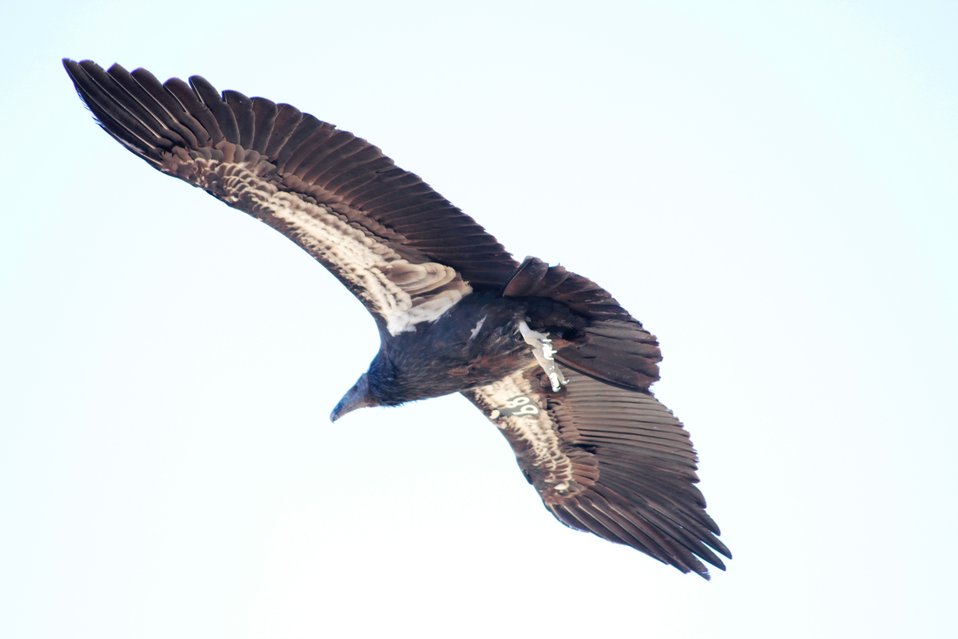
Condor underside

The adult California Condor is a uniform black, with the exception, especially in the male, of large triangular patches or bands of white on the underside of the wings. It has gray legs and feet, an ivory-colored bill, a frill of black feathers surrounding the base of the neck, and brownish red eyes.

As an adaptation for hygiene, the condor's head and neck have few feathers, which exposes the skin to the sterilizing effects of dehydration and solar ultraviolet light at high altitudes. The skin of the head and neck is capable of flushing noticeably in response to emotional state, a capability that can serve as communication between individuals. The skin color varies from yellowish to a glowing reddish-orange.

Contrary to the usual rule among true birds of prey, the female is slightly smaller than the male. Overall length can range from 109–140 cm (43–55 in) and the wingspan is 2.49–3 m (8.2–9.8 ft). Their weight can range from 7–14.1 kg (15–31 lb), with estimations of average weight ranging from 8–9 kg (18–20 lb). Wingspans of up to 3.4 m (11 ft) have been reported but no wingspan over 3 m (9.8 ft) has been verified.